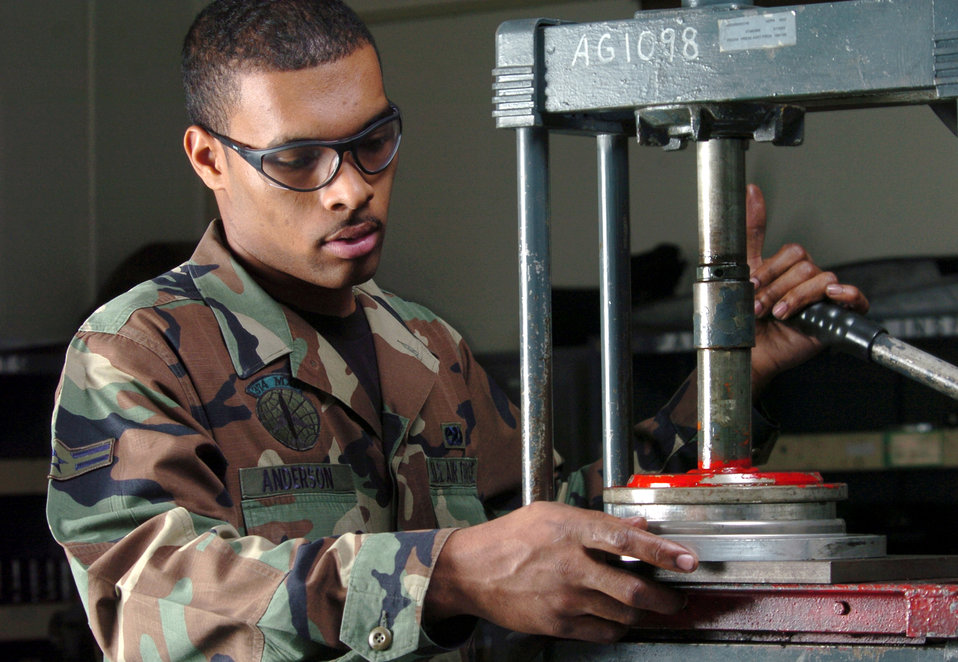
Start the presses

YOKOTA AIR BASE, Japan -- Airman 1st Class Willie Anderson uses a hydraulic press to install shaft seals on a C-130 Hercules propeller assembly during an inspection here. He is a mechanic assigned to the 374th Maintenance Squadron at the T56 Engine Regional Repair Center here. The center handles all C-130 engine repairs in Pacific Air Forces.